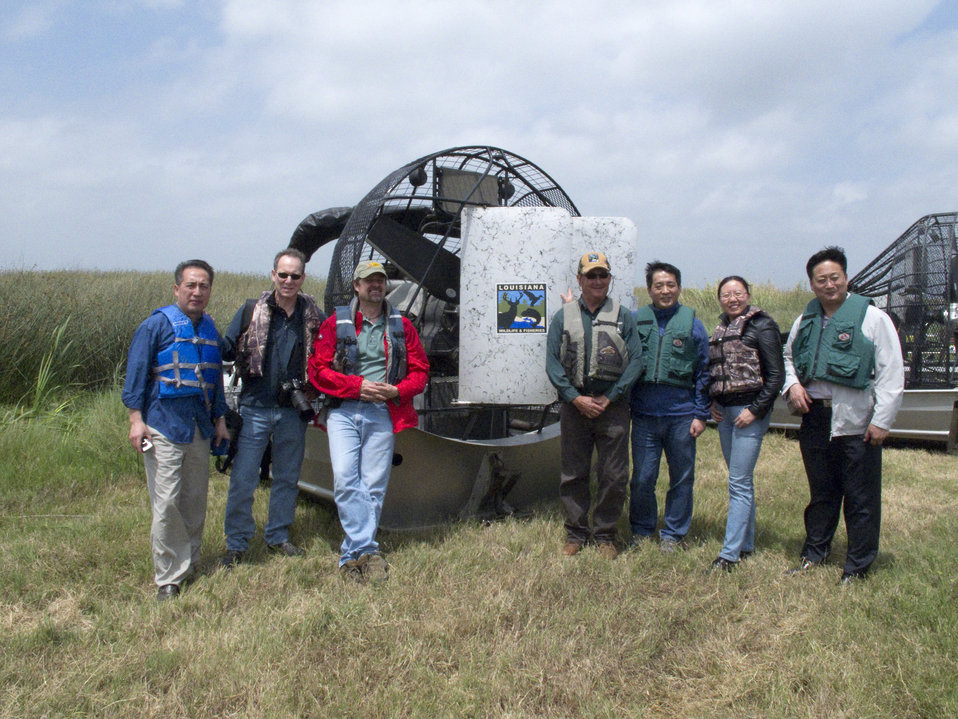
Airboat ride, Rockefeller Wildlife Refuge

FWS employees and the Chinese CITES delegation traveled to Louisiana to learn about alligator conservation.